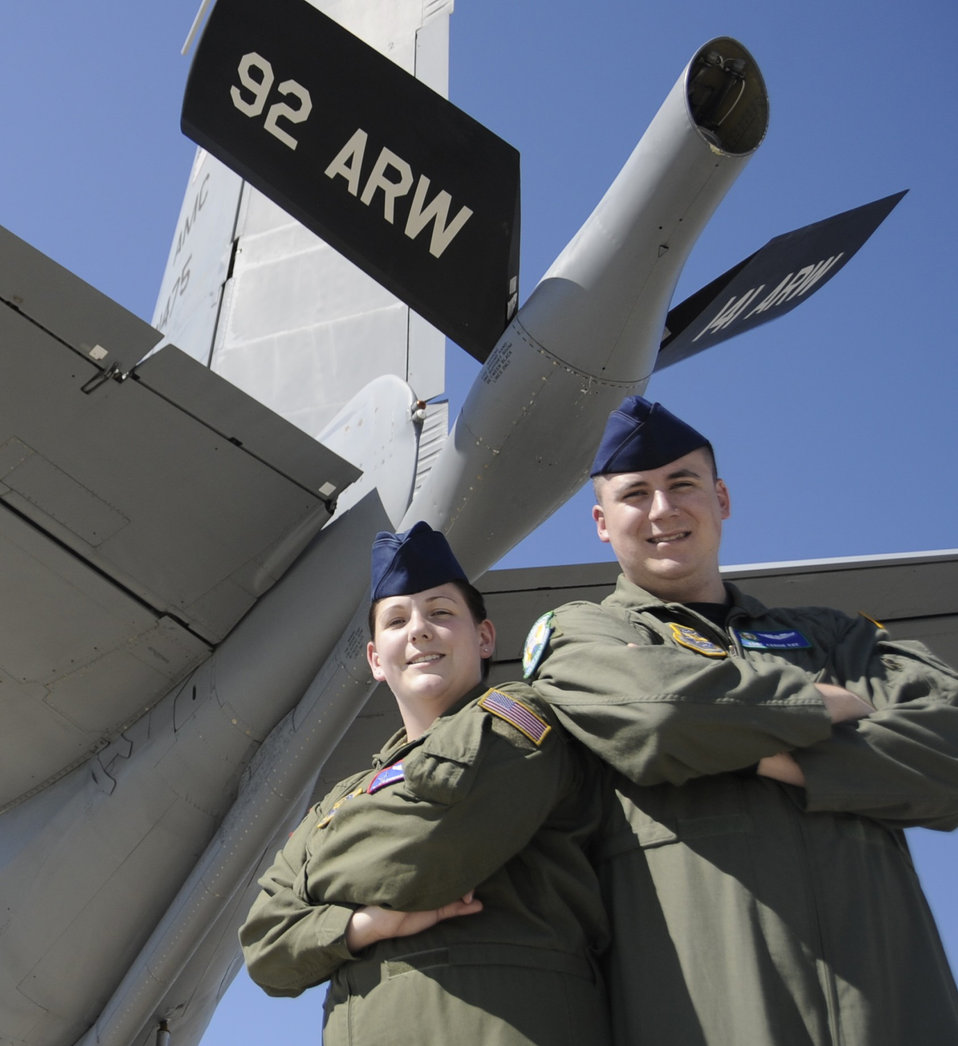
Fairchild couple make refueling a family affair

Staff Sgts. Leighann and Aaron Ray are both boom operators assigned to the 92nd Air Refueling Wing at Fairchild Air Force Base, Wash.